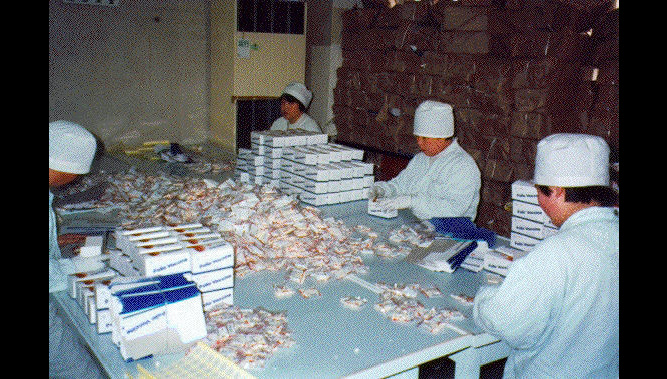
Technicians packing polio vaccine.